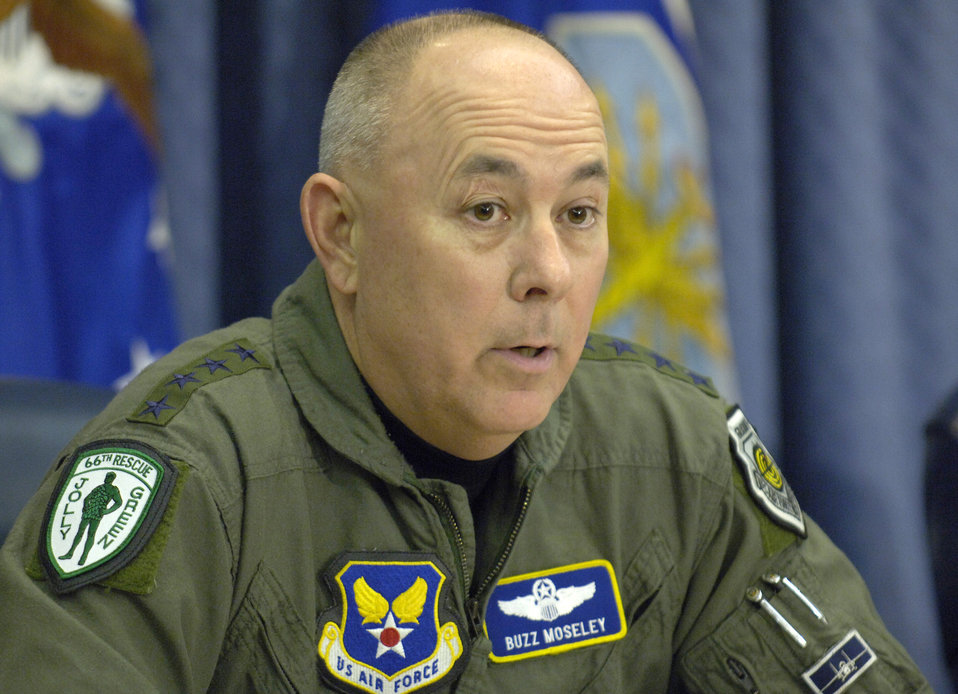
Media round table

WASHINGTON (AFPN) -- Chief of Staff of the Air Force Gen. T. Michael Moseley answers a reporter's questions during a media round table discussion at the Pentagon Dec. 13.